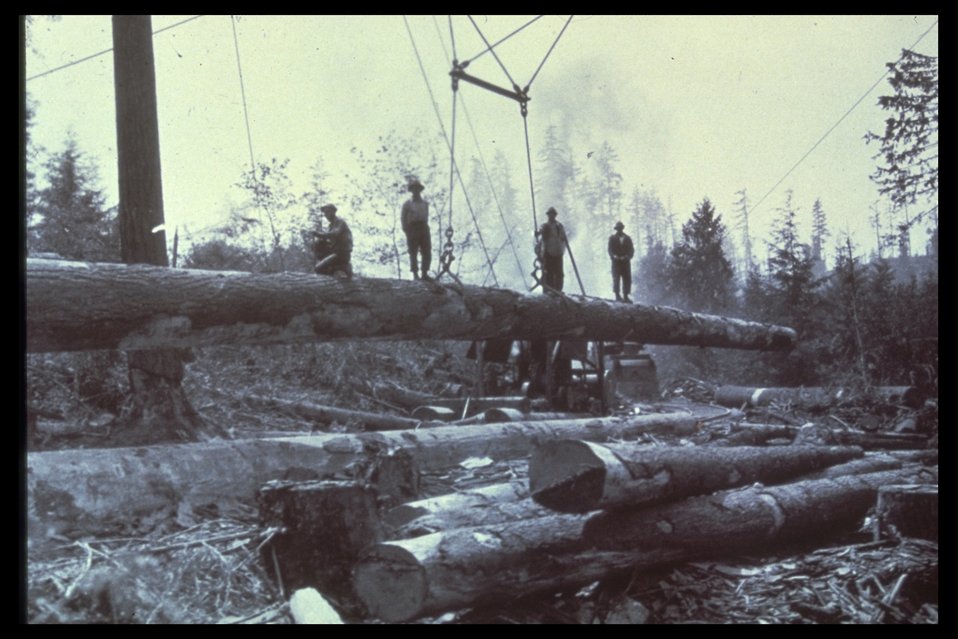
Black and white photo of loggers in woods with downed timber.